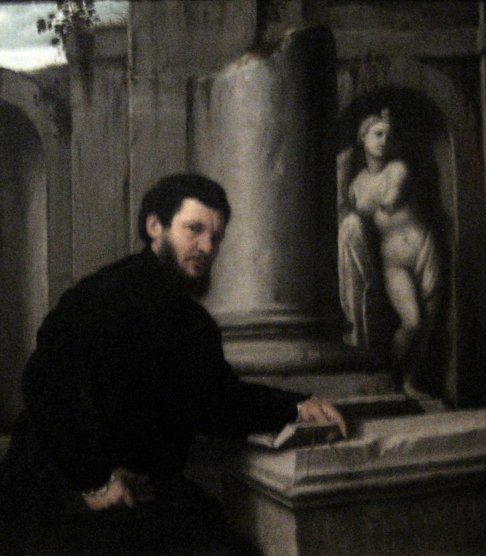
'Portrait of Marco Antonio Savelli', oil on canvas painting by Giovanni Battista Moroni, c. 1543-1547, Museu Calouste Gulbenkian, Lisbon